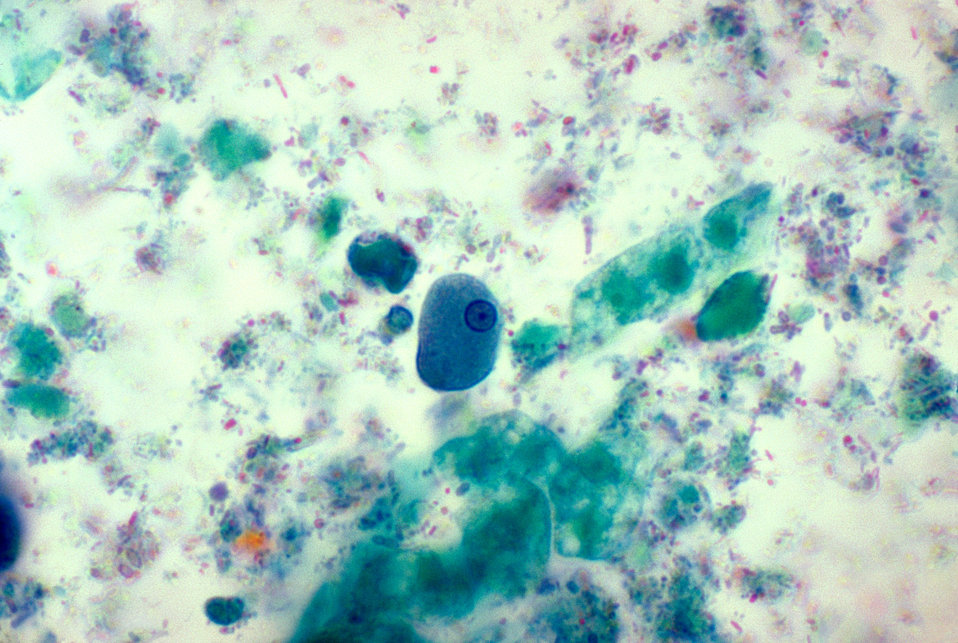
This trichrome-stained slide revealed an Entamoeba histolytica trophozoite with its typical nucleus.